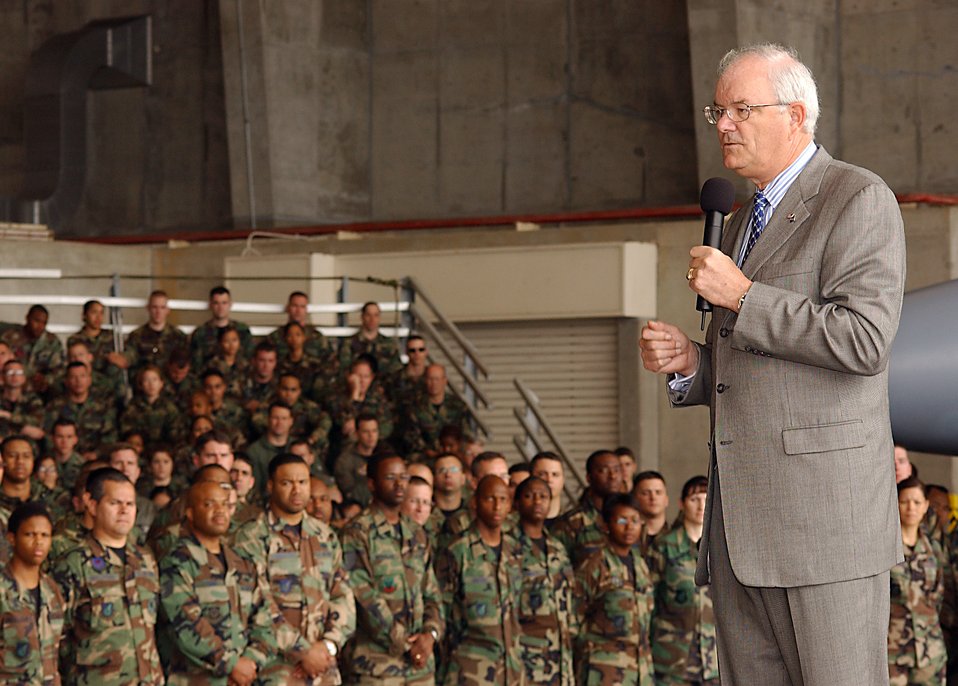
SECAF visits Kadena

Secretary of the Air Force Michael W. Wynne speaks to Airmen during his base tour of Kadena Air Base, Japan, Thursday, March 23, 2006. Secretary Wynne spent two days at the Air Force's largest combat wing as part of his tour of bases in the Pacific theater.